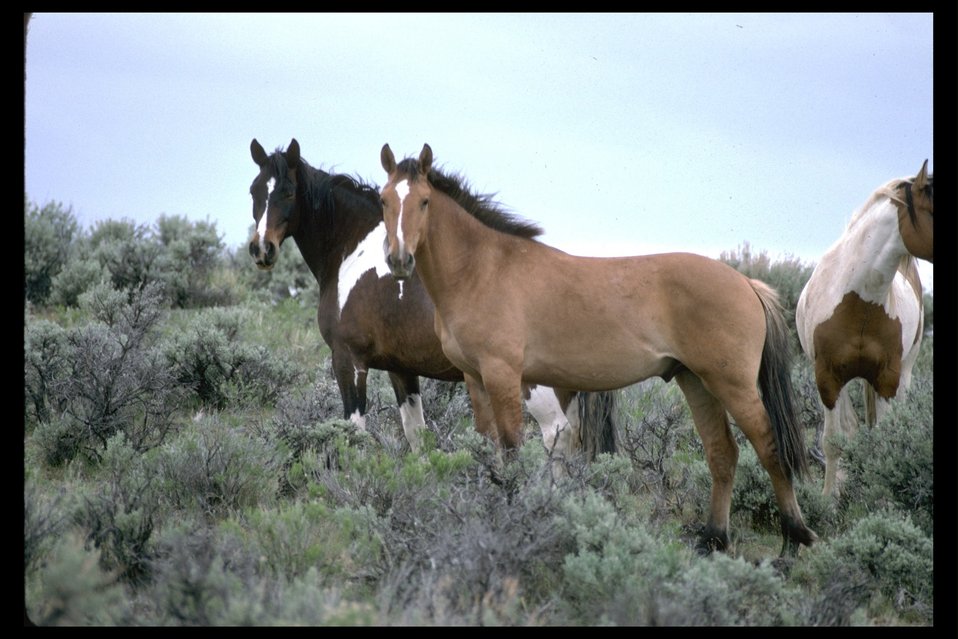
South Steens wild horses on the range.